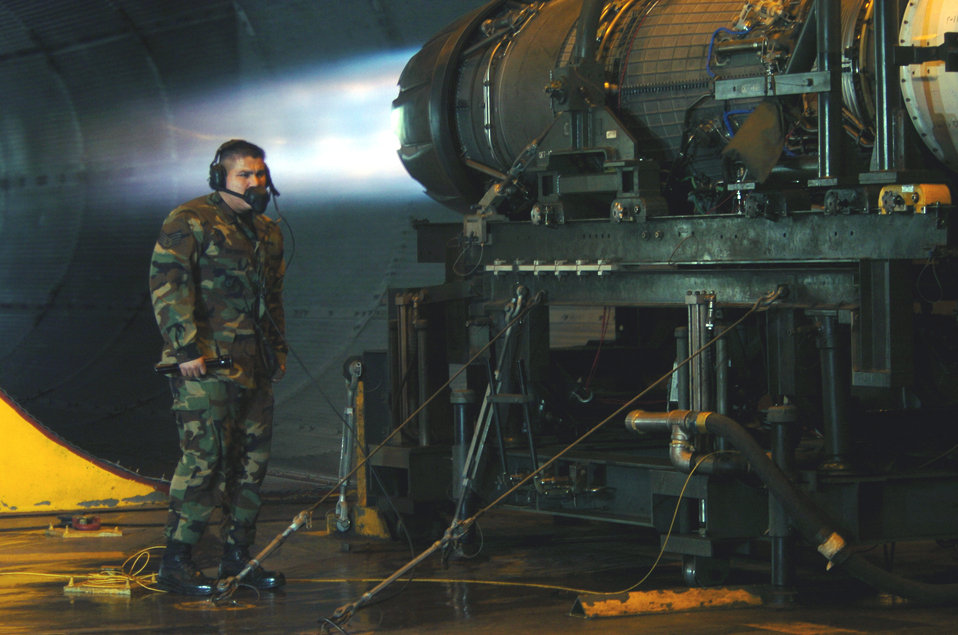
Keep engines running

OSAN AIR BASE, South Korea -- Staff Sgt. Daniel Guerra looks for fuel leaks while an F-16 Fighting Falcon engine